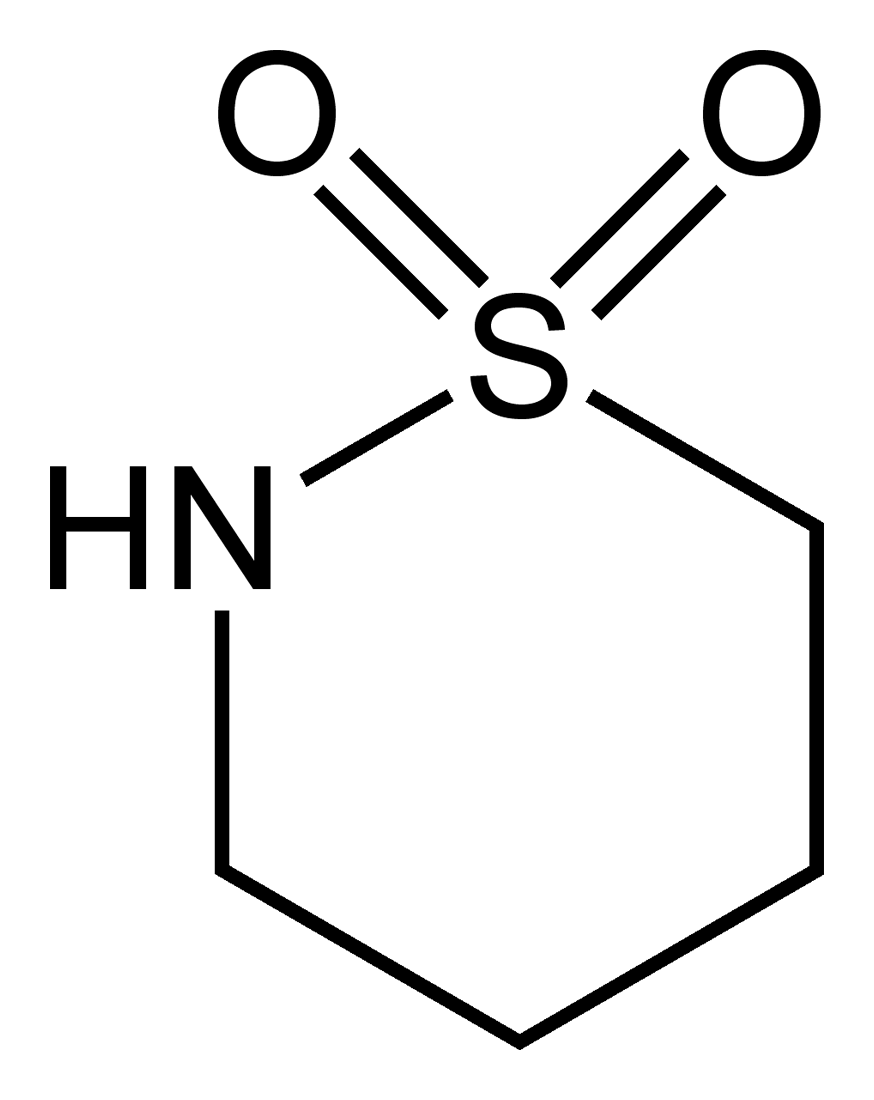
Skeletal formula of 1,4-butanesultam